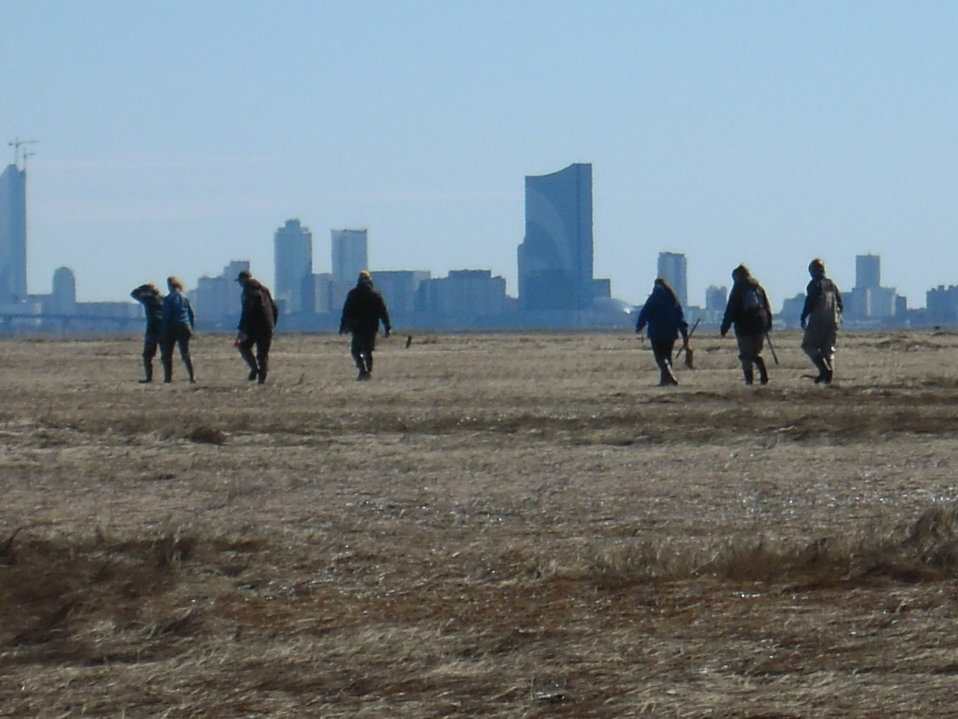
Salt Marsh field work

“Our goal is to get people comfortable dealing with conceptual models and talking about processes,” said Susan Adamowicz. “If we don’t understand the processes, we’ll never save the species.”